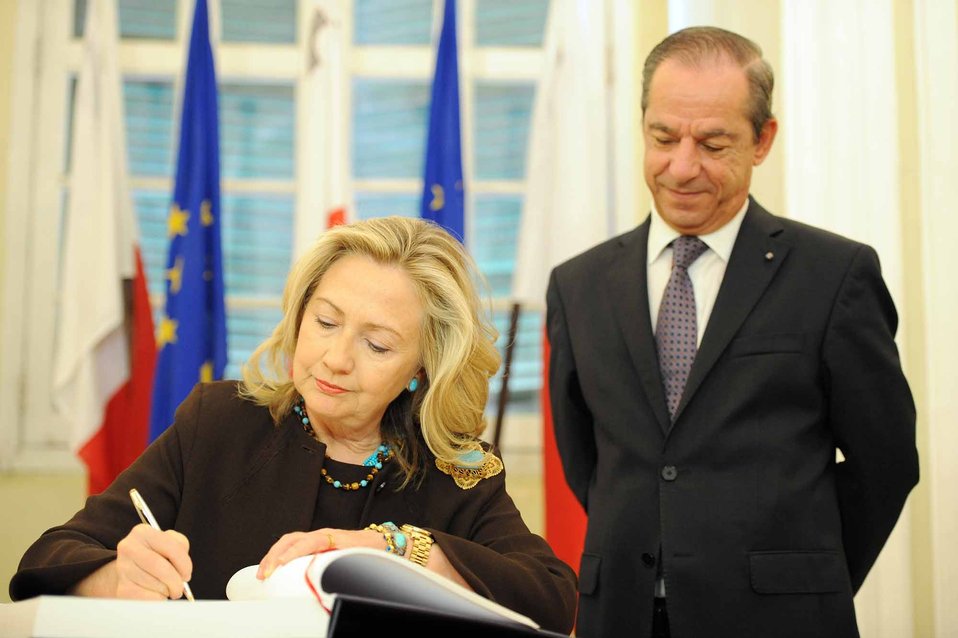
Secretary Clinton Signs the Visitors' Book

U.S. Secretary of State Hillary Rodham Clinton, with Maltese Prime Minister Lawrence Gonzi, signs the Visitors’ Book at the Auberge de Castille in Valletta, Malta, on October 18, 2011.